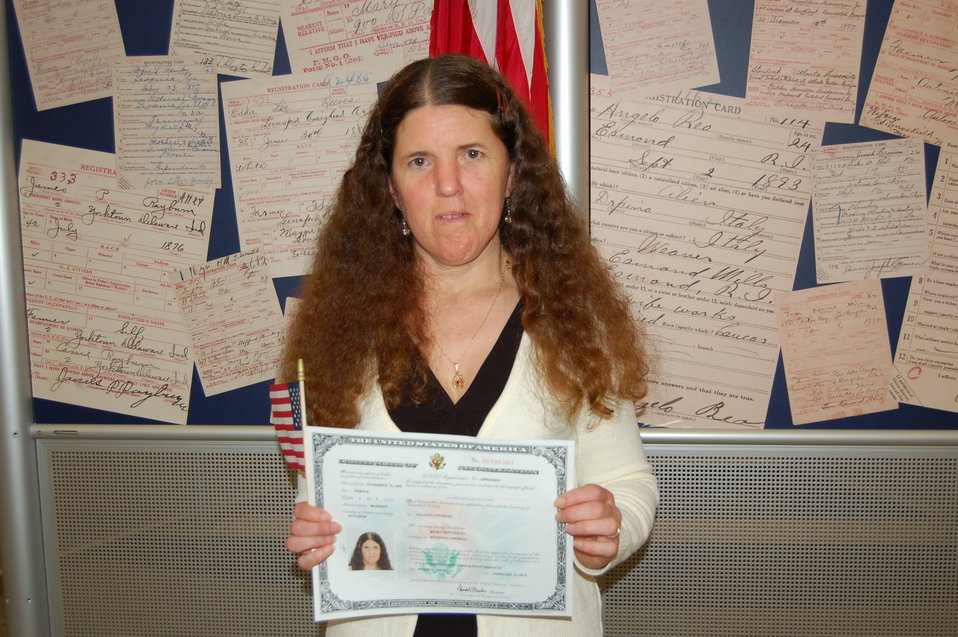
New Citizens